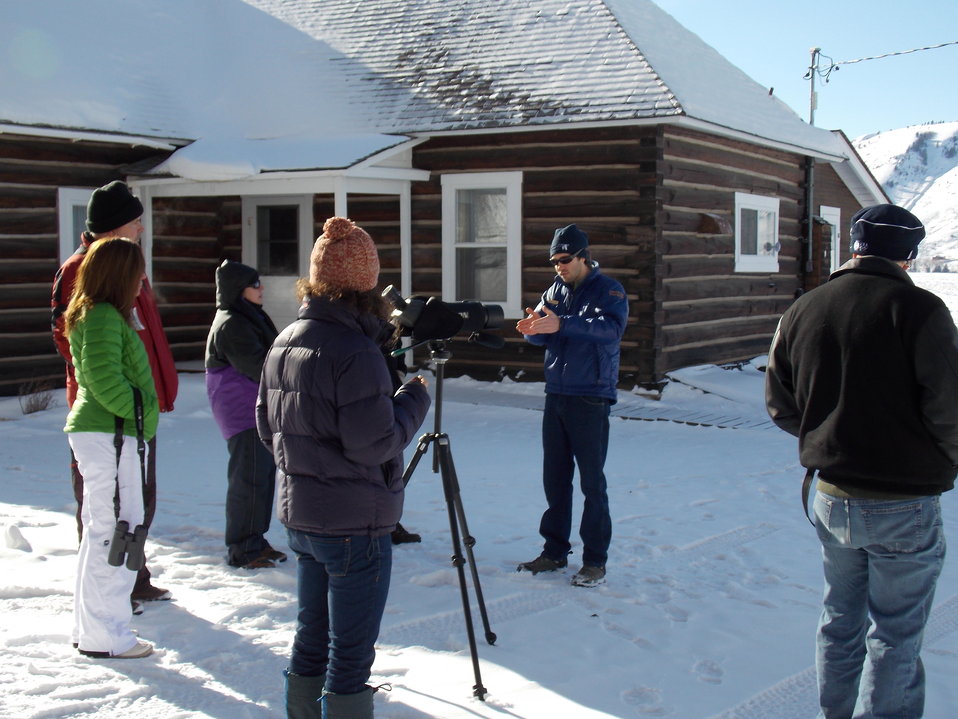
A Visit to the Historic Miller House

Though the Historic Miller House and grounds are closed to the general public during the winter months, the wildlife excursions include a stop at the location and incorporate information about refuge history into the tour.